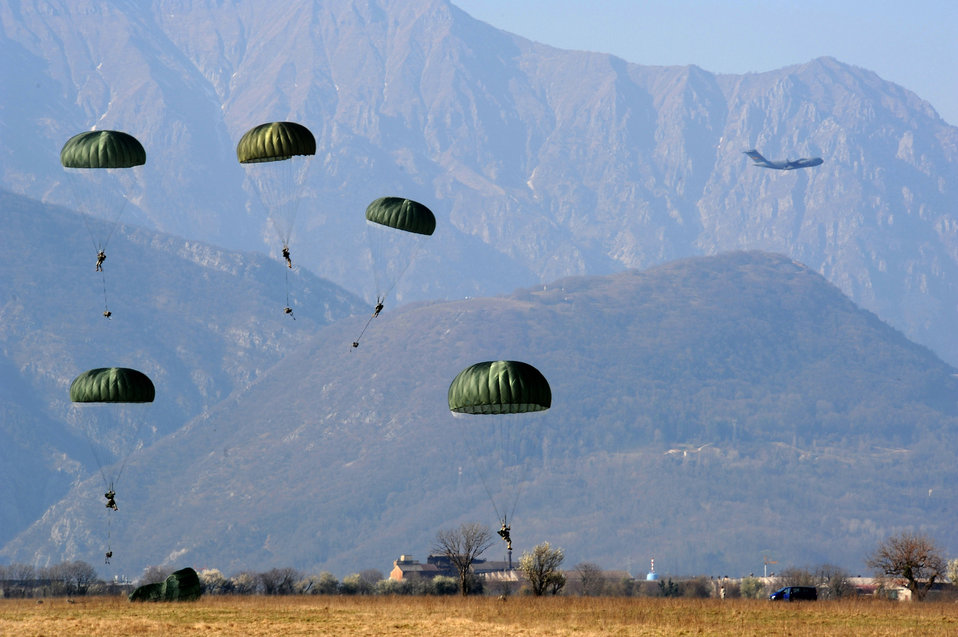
8th Air Support Operations Squadron hosts Jump Week

Members from the U.S. Army 173rd Airborne Brigade Combat Team conducts combat jump operations from a C-17 Globemaster III during a joint coalition training exercise March 23, 2011, at Aviano Air Base, Italy. More than 1,400 personnel from the 173rd ABCT, the 8th Air Support Operation Squadron and Italian Army paratroopers participated in the weeklong event.